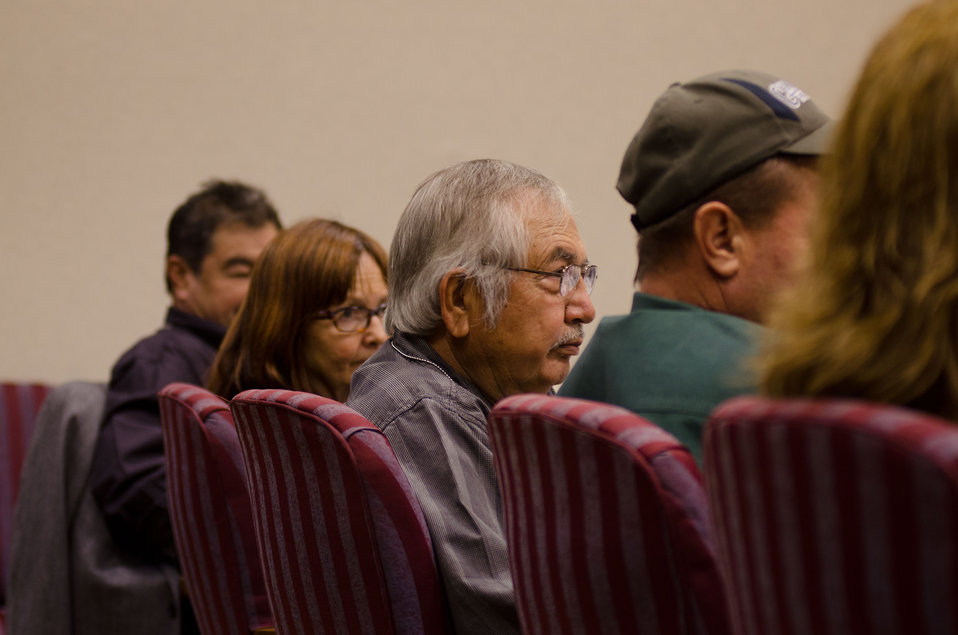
The first administrative/training meeting of the U.S. Department of Agriculture's (USDA) Council for Native American Farming and Ranching (CNAFR) held on Monday, Aug. 13, 2012 at the USDA headquarters Whitten Building, in Washington, D.C. CNAFR was created to advise the Secretary on ways to eliminate barriers to participation for Native American Farmers and Ranchers in USDA programs. The Council was established as part of the Keepseagle settlement, and is conducted under the oversight of USDA's Office of Tribal Relations, which is part of the Office of the Secretary of Agriculture. The Director of Tribal Relations Joanna Mounce Stancil serves as Designated Federal Official (DFO) for the Council.